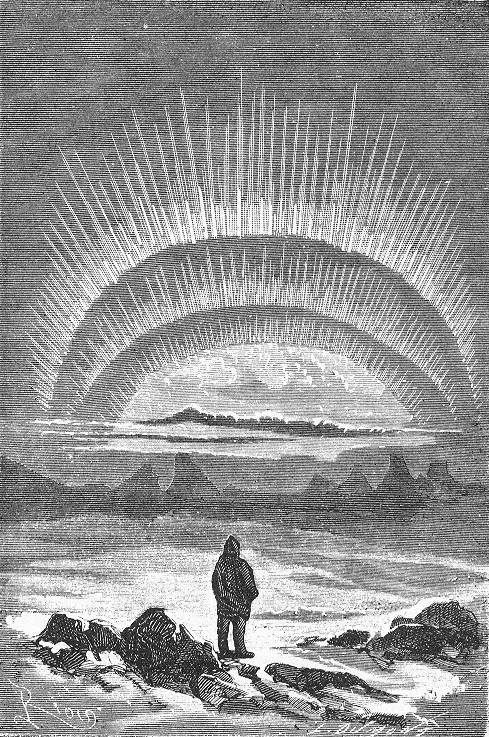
An illustration from Jules Verne's novel 'Journeys and Adventures of Captain Hatteras', part I: 'The English at the Noth Pole' drawn by Édouard Riou and/or Henri de Montaut. Polski: Ilustracja powieści Juliusza Verne'a 'Podróże i przygody kapitana Hatterasa', części I: 'Anglicy na Biegunie Północnym' autorstwa Édouarda Riou i/lub Henri de Montauta. Français : Jules Verne: 'Voyages et aventures du capitaine Hatteras - Les Anglais au Pôle Nord', Édouard Riou et Henri de Montaut.